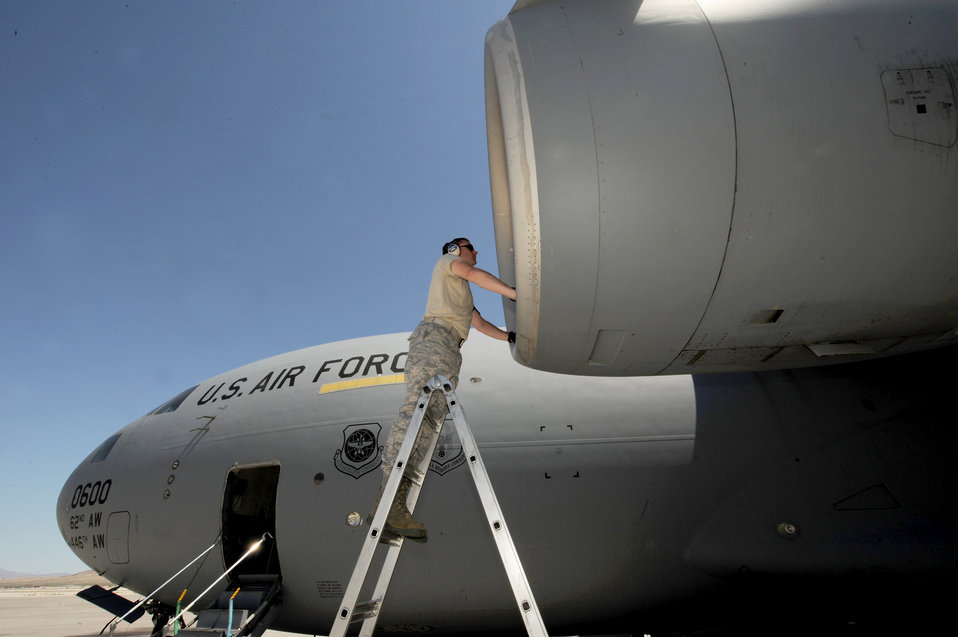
Mobility Air Forces exercise

Tech. Sgt. Patrick Remfrey checks the intake on a C-17 Globemaster III during the Mobility Air Forces exercise May 19, 2010, at Nellis Air Force Base, Nev. Sergeant Remfrey is crew chief assigned to the 62nd Aircraft Maintenance Squadron at McChord AFB, Wash.